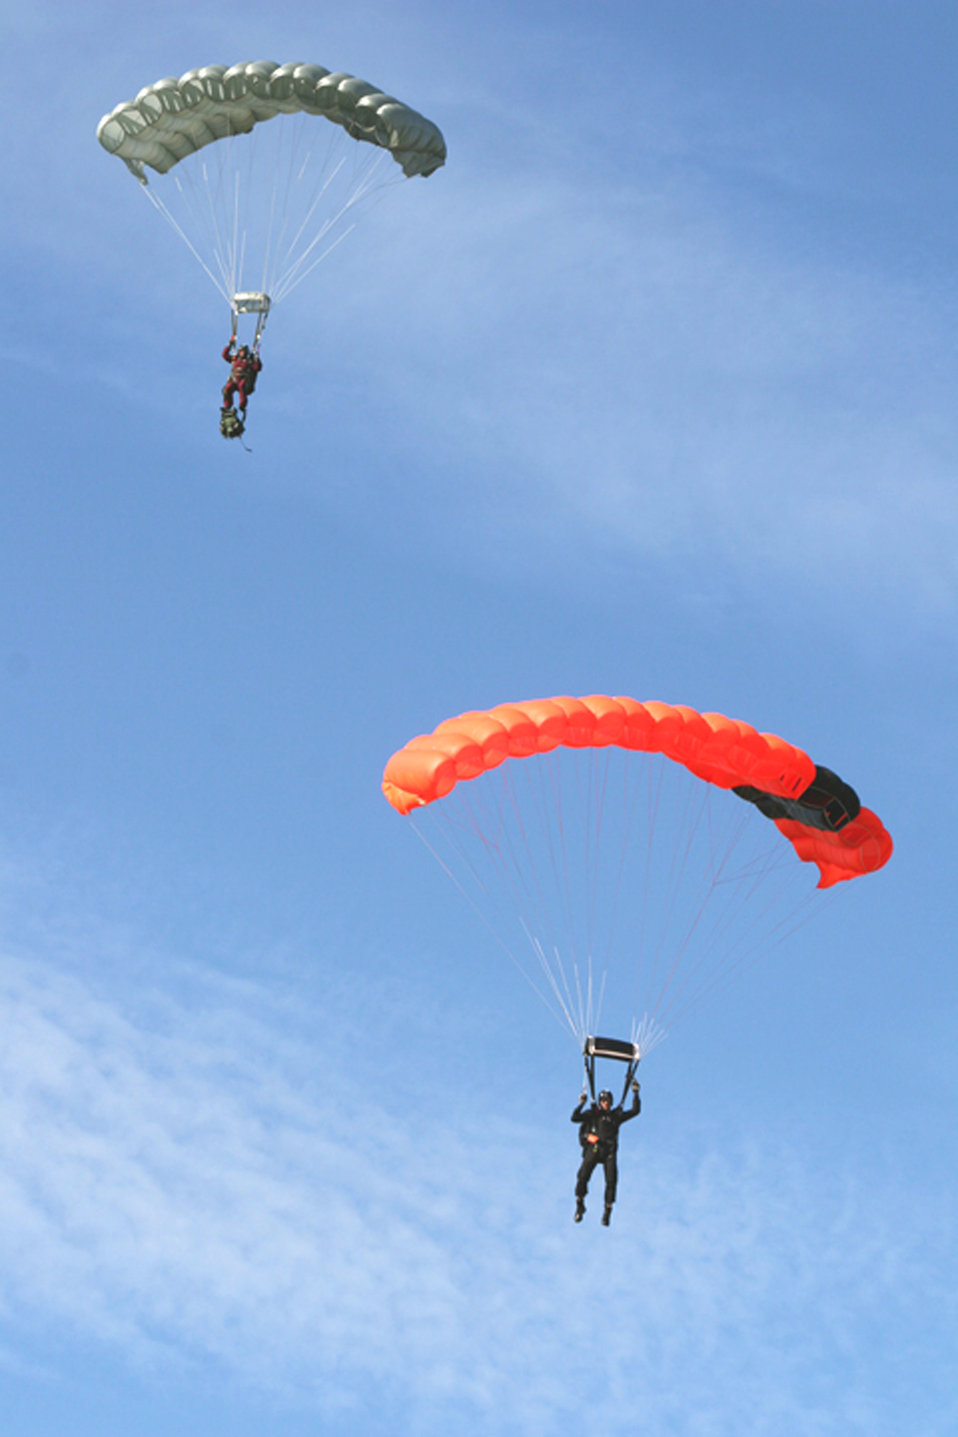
Joint jump

American and Canadian pararescue jumpers descend onto Cape Canaveral Air Station, Fla., on Jan. 5 as part of an international search and rescue exercise. Air Force Reserve Command PJs from the 920th Rescue Wing at Patrick Air Force Base, Fla., participated with Canadian rescue forces from the 435th Air Transport and Rescue Squadron based in Winnipeg, Manitoba.